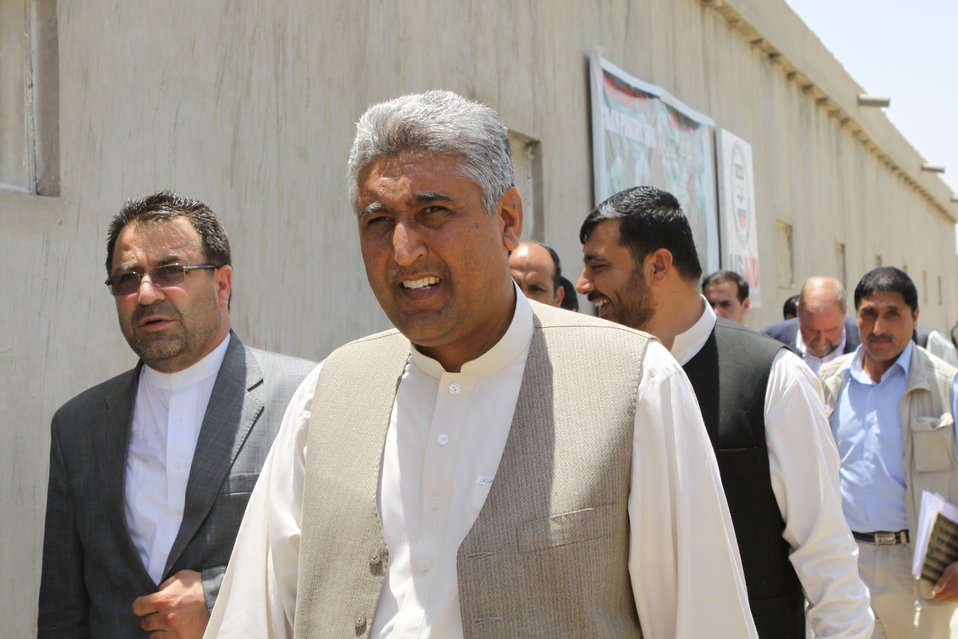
Bolan Poultry Farm